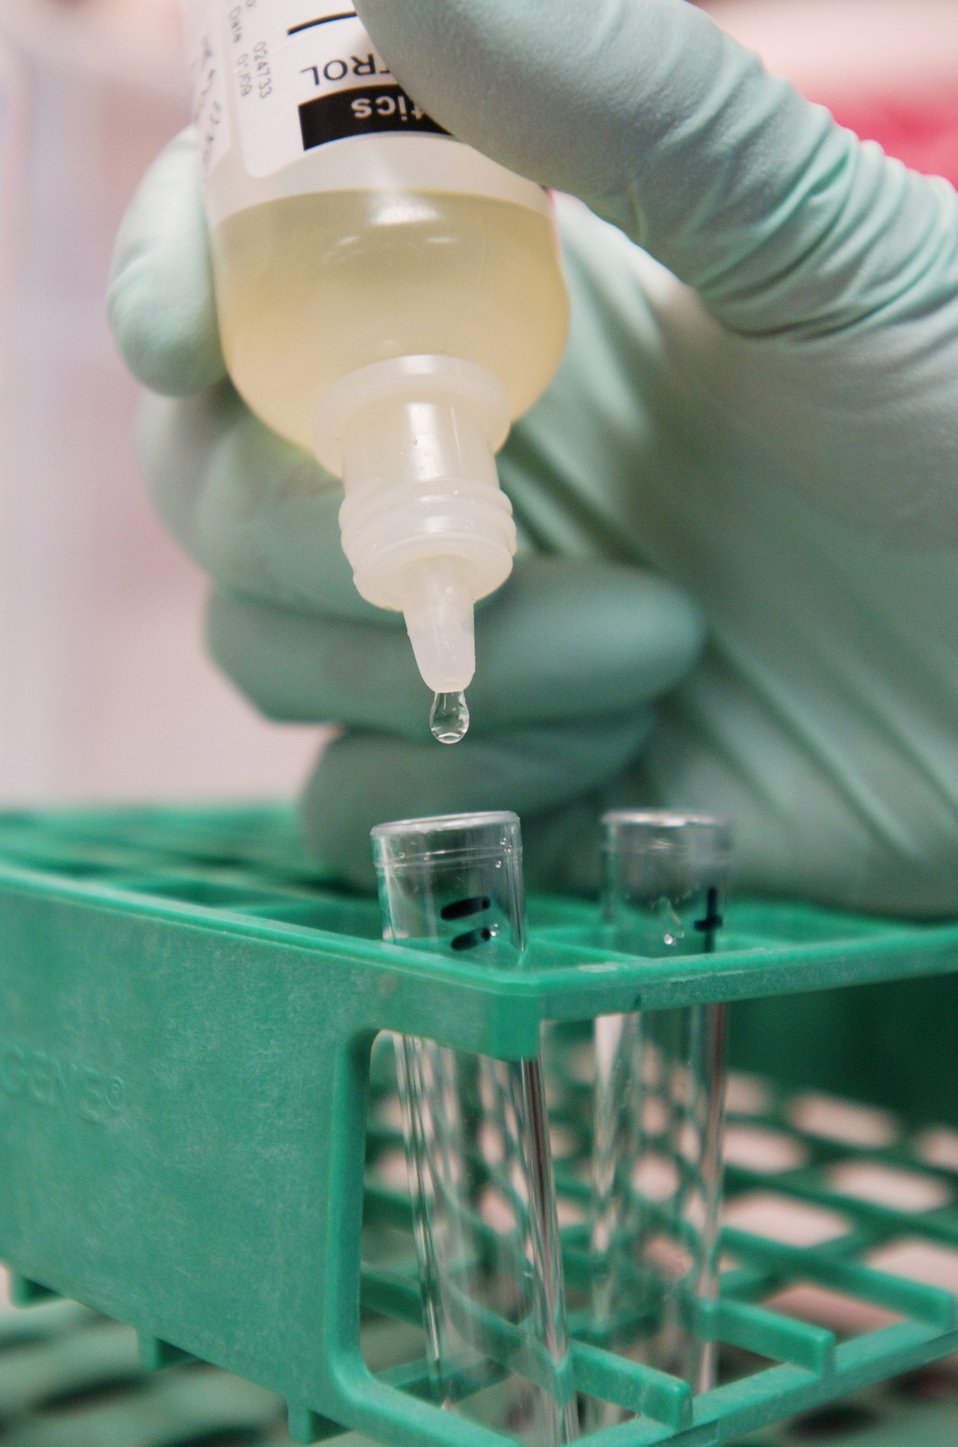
Testing samples

A control sample specimen is placed into a test tube for comparison with a patient fluid specimen to determine any abnormalities Dec. 12 at Eielson Air Force Base, Alaska. Laboratory technicians use various methods to test for abnormalities such as bacteria for clinical diagnosis.